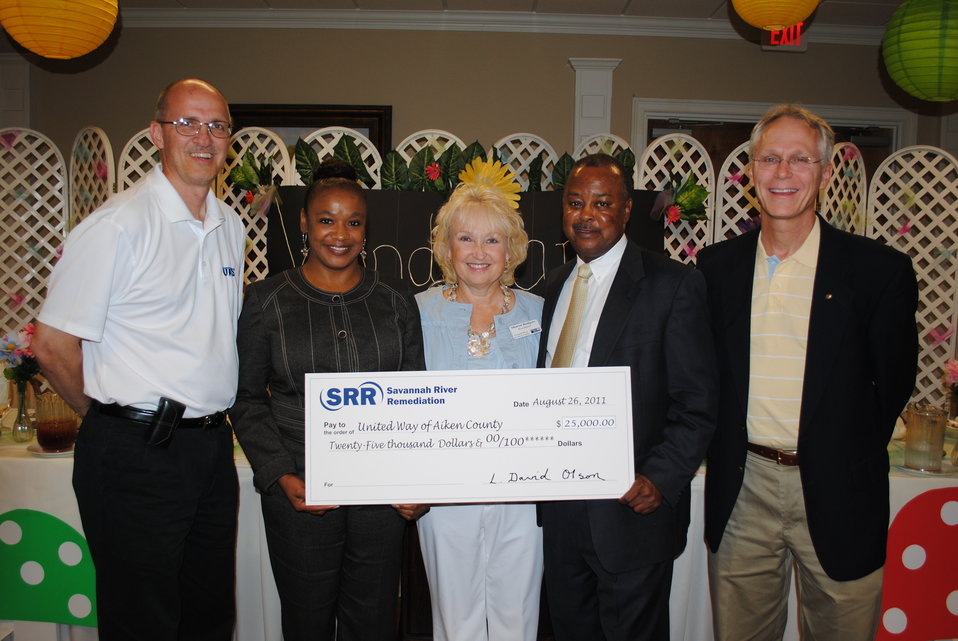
Savannah River Remediation Helps Set the Campaign Pace By Donating $25,000 to United Way of Aiken County

AIKEN, S.C. (August 29, 2011) – Savannah River Remediation (SRR) donated $25,000 to the United Way of Aiken County’s annual fund-raising campaign, which kicked off on Friday.